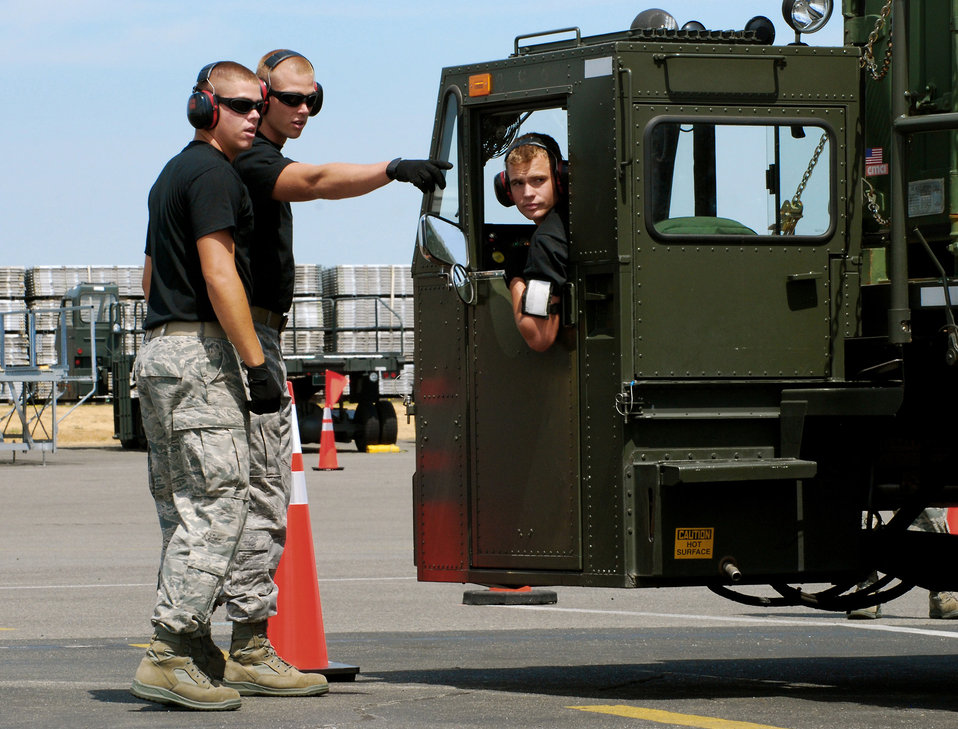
Back it up!

Senior Airman Coban Goertz gets help from spotters from the 436th Aerial Port Squadron as he backs up while trying to avoid hitting cones July 20. Team Dover aerial porters are participating in the Air Mobility Rodeo at McChord Air Force Base, Wash., where they are graded on various exercises aimed at moving cargo and passengers. Airman Goertz is a 60K loader driver with the Air Force Reserve Command's 46th Aerial Port Squadron.